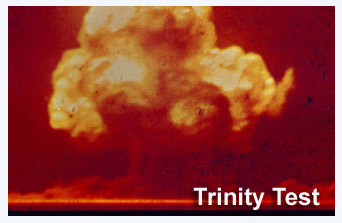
The Trinity test was the dawn of the atomic age.